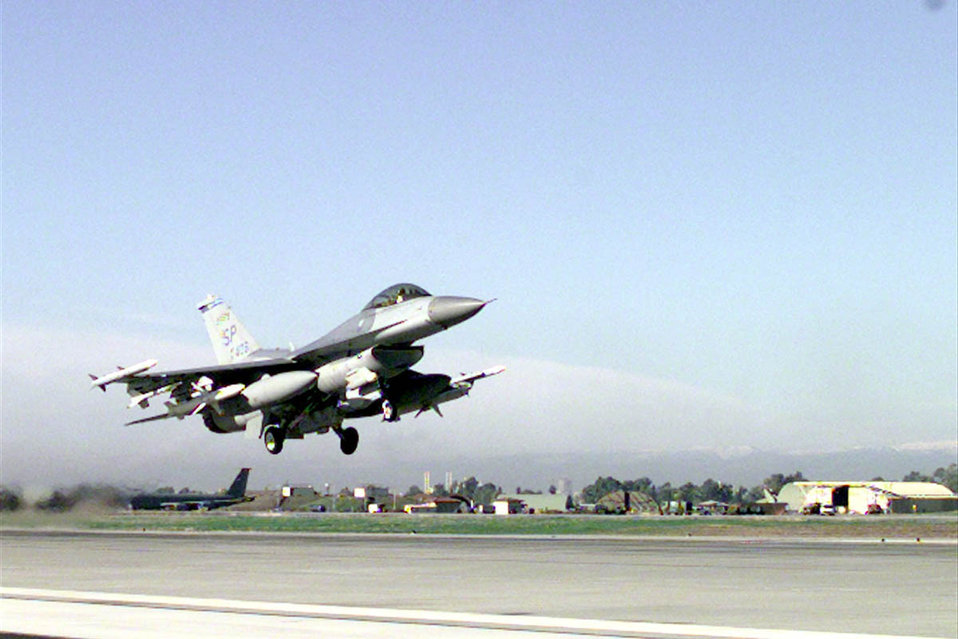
Into the air

OPERATION NORTHERN WATCH -- An F-16CJ takes off from the flightline at Incirlik Air Base, Turkey, Dec. 30, during a sortie in support of Operation Northern Watch. The F-16 is on temporary duty from Spangdahlem Air Base, Germany.